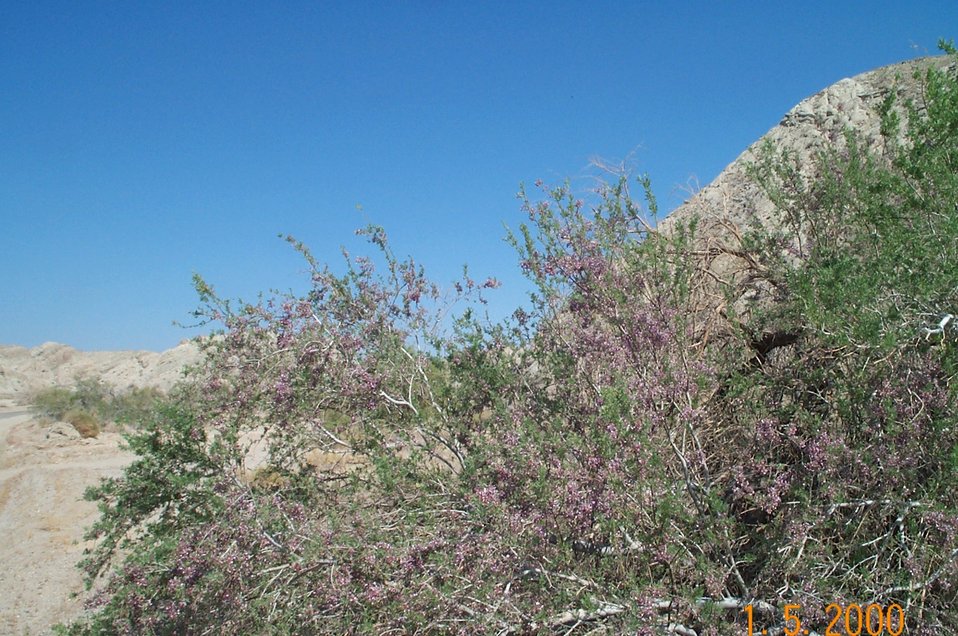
Desert vegetation (ironwood in bloom)